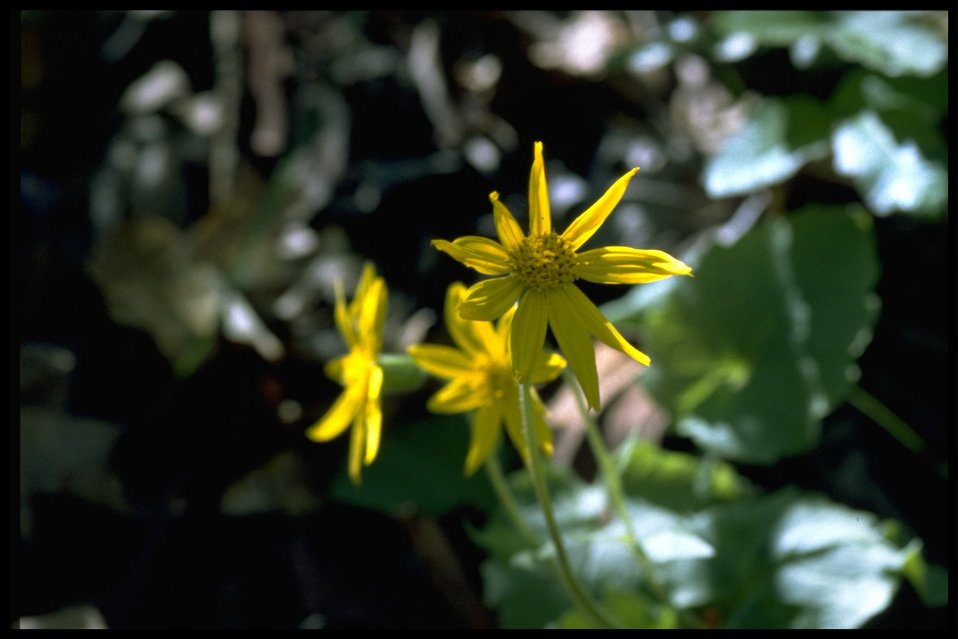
Medium shot of Amica.